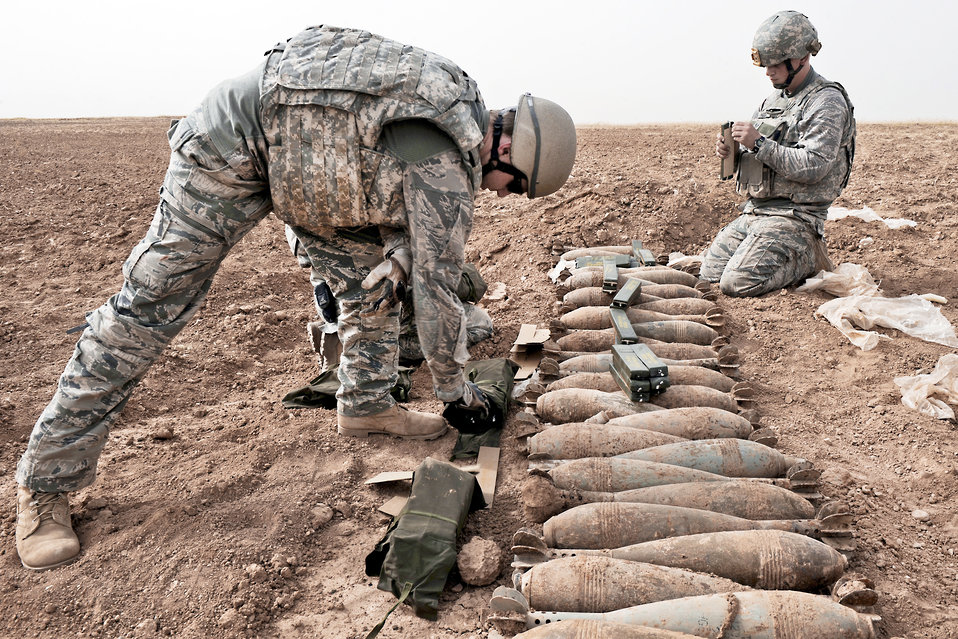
Ever so gently

Staff Sgt. Matt Skelton (left) and Staff Sgt. Charles Hodge prepare to detonate old 120-mm Russian mortar rounds April 13, 2010, in a desolate area of Iraq. The two explosive ordnance disposal NCOs are with the 506th Civil Engineer Squadron at Joint Base Balad, Iraq.